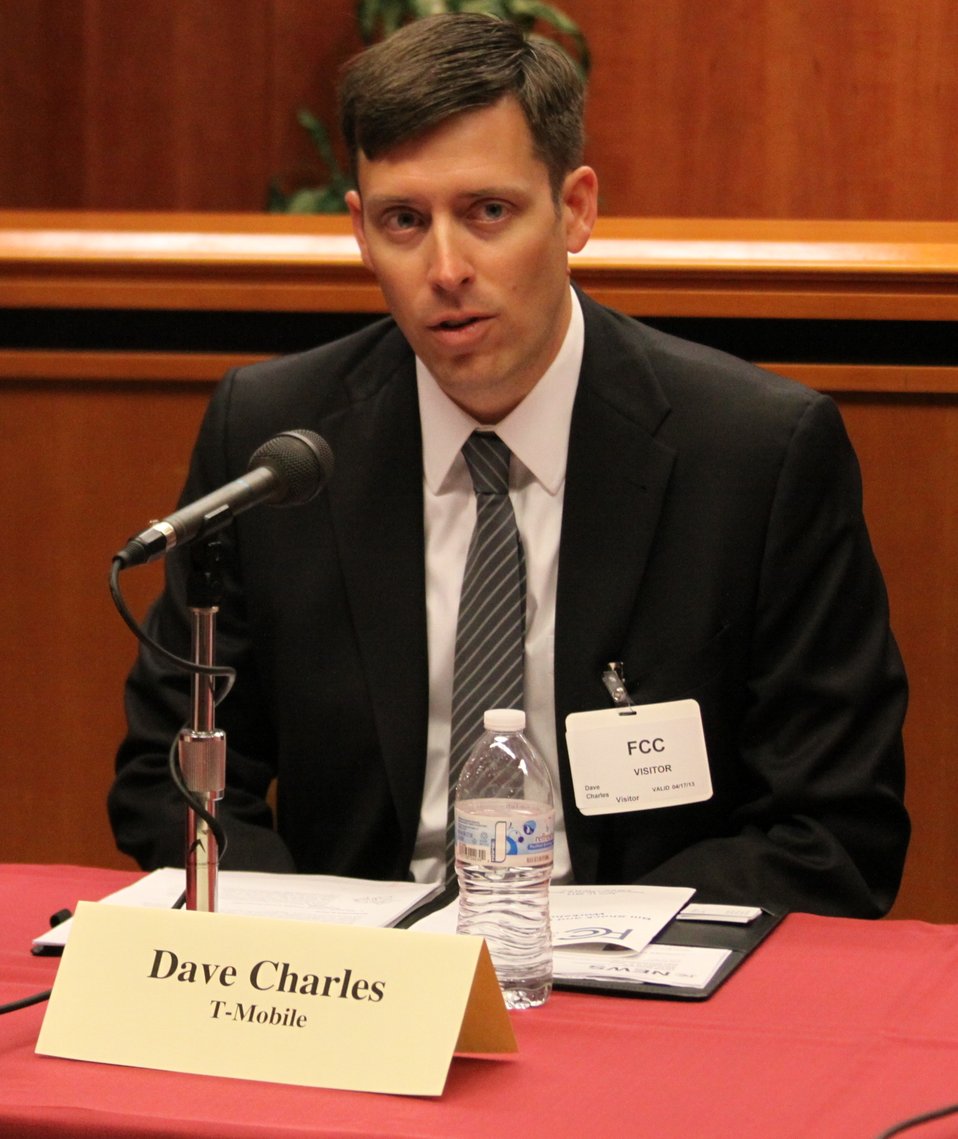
April 17, 2013 Bill Shock and Cramming Workshop